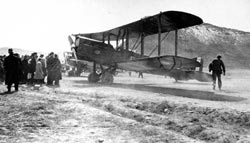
DeHavilland DH-4

The DH-4 was an ever-present element of the US Army Air Service both during and following World War I. When the US entered World War I in April 1917, the Aviation Section of the Signal Corps only had 132 aircraft, all obsolete. Modeled from a combat tested British De Havilland design, the DH-4 was the only US built aircraft to see combat during World War I.